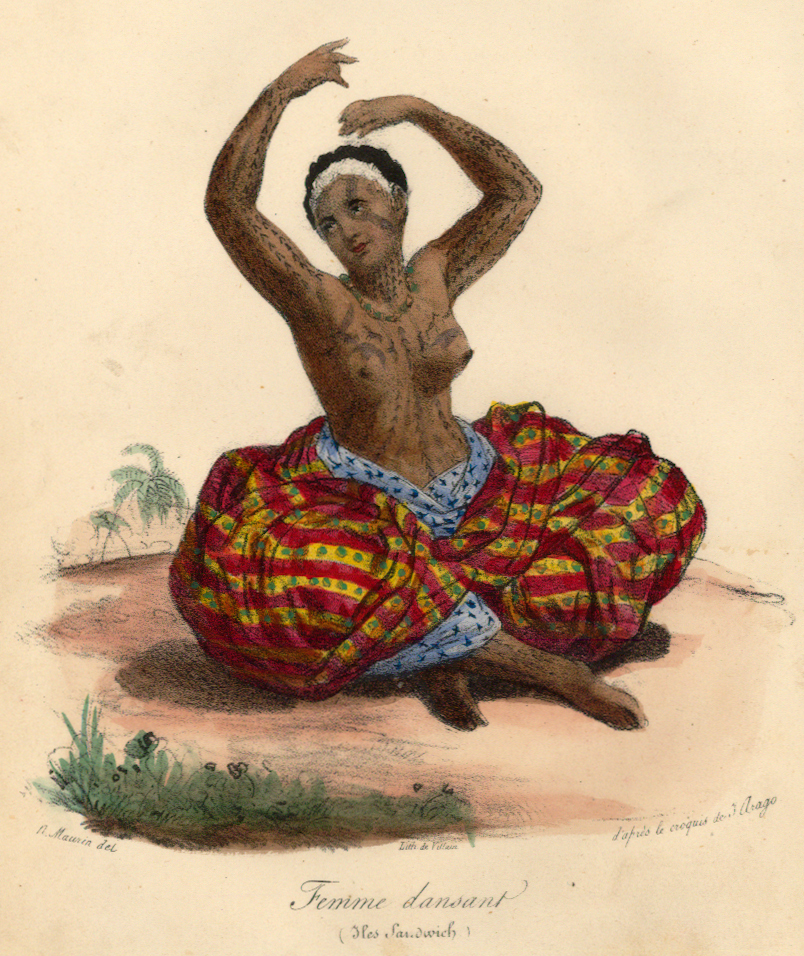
'Femme dansant, Iles Sandwich' by Jacques Arago, published 1840